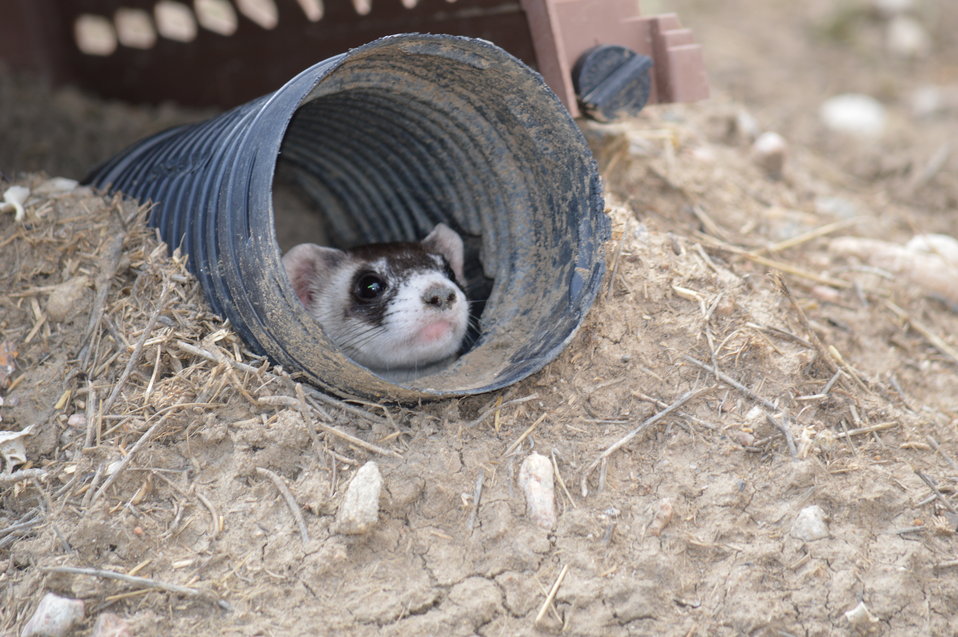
Interns visit the NBFFCC

In the summer of 2012, USFWS Region 6 interns visited the National Black-footed Ferret Conservation Center (NBFFCC) in Colorado to learn how the program reintroduces the endangered Black-footed ferret back into its native habitat.